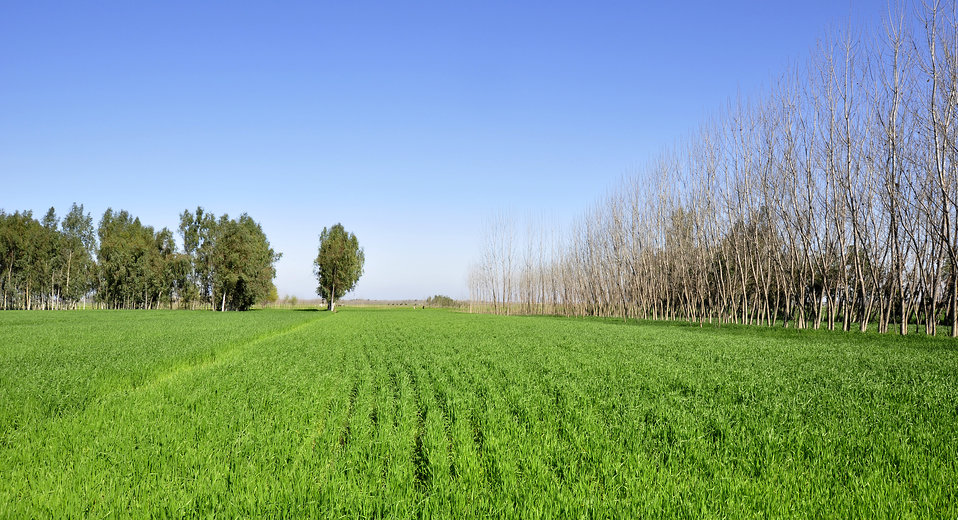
2011 March: USAID's Agricultural Recovery Program in 22 districts of Khyber Pakhtunkhwa, Punjab and Balochistan is an excellent example of the impact US development assistance can have. We have helped more than 500,000 farmers salvage the winter planting season and livestock after the floods. As a result, wheat farmers have nearly doubled their harvests. More than 5 million people have benefited. These photos show progress of the USAID Agricultural Recovery Project in Khyber Pakhtunkhwa.